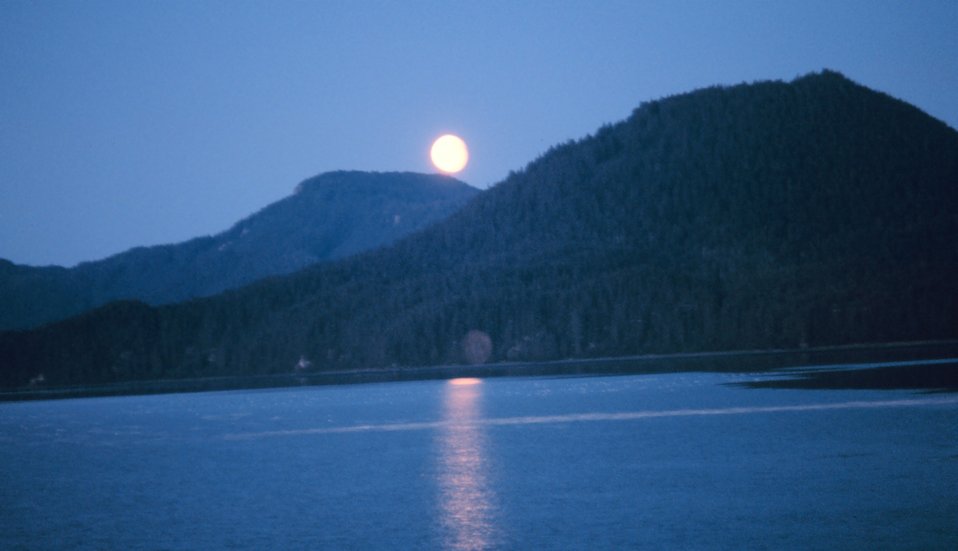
Moonrise on Hobart Bay